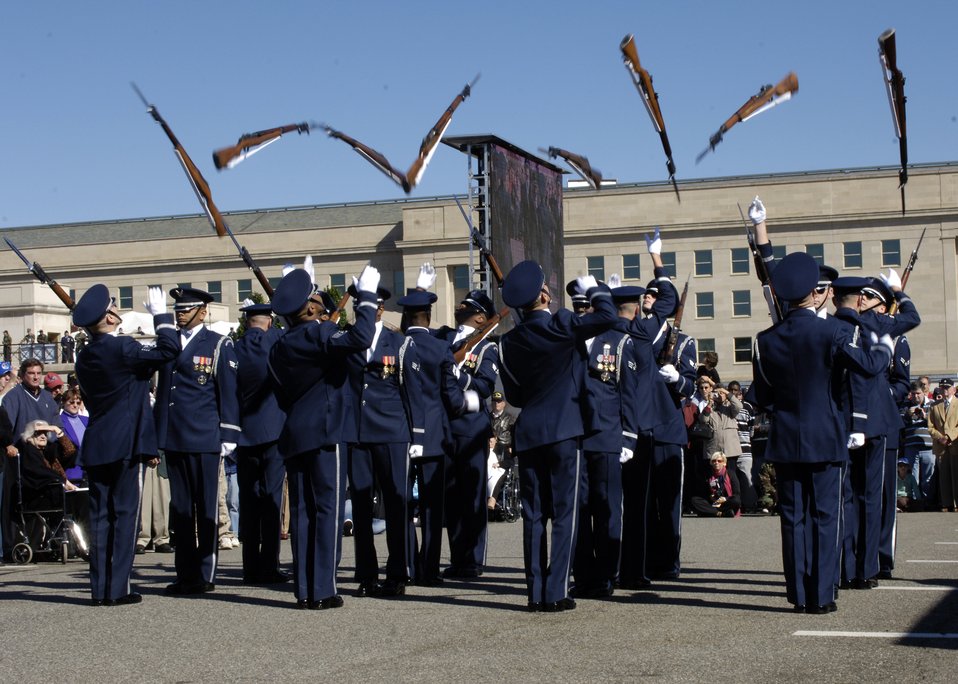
Weapons Toss

Members of the United States Air Force Drill Team perform during the Air Force open house at the Pentagon on Saturday, Oct. 14, 2006. The open house is running in conjunction with the official ceremony to dedicate the Air Force Memorial. President George W. Bush will join Senior Defense Dept. and Air Force officials in a ceremony to present the memorial to the Nation. Desiged by the late James Ingo Freed the memorial with its three soaring spires inspired by the U.S. Air Force Thunderbirds bomb burst manuever, pays tribute to and honors the patriotic men and women of the U.S. Air Force and its predeccessor organizations. An open house will run near the Pentagon in conjunction with the dedication ceremony which will feature performances by the U.S. Air Force Band, the U.S. Air Force Honor Guard drill team, and will culminate with a concert featuring country music performer LeeAnn Womack.